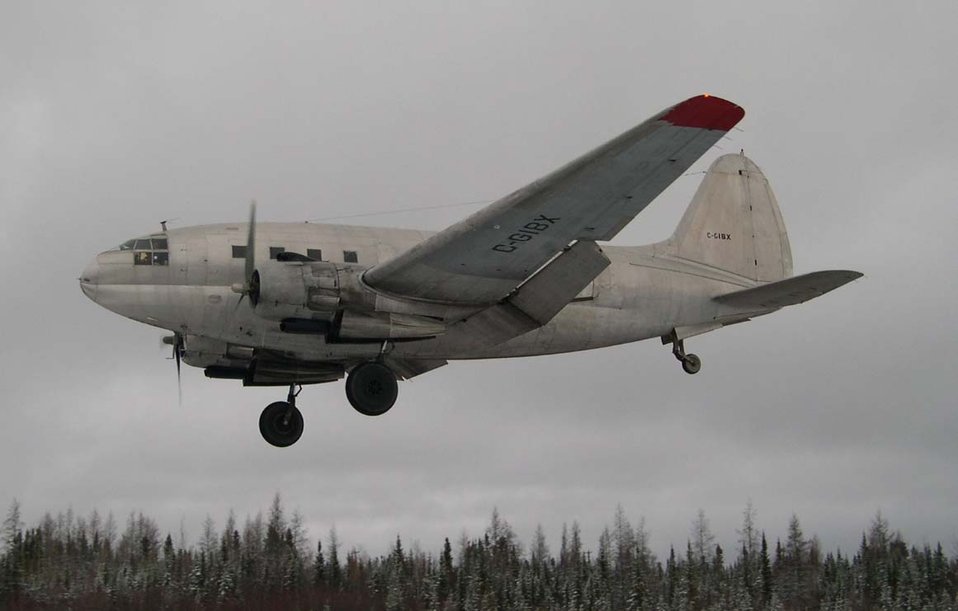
First Nations Transportation Curtiss-Wright C-46 Commando